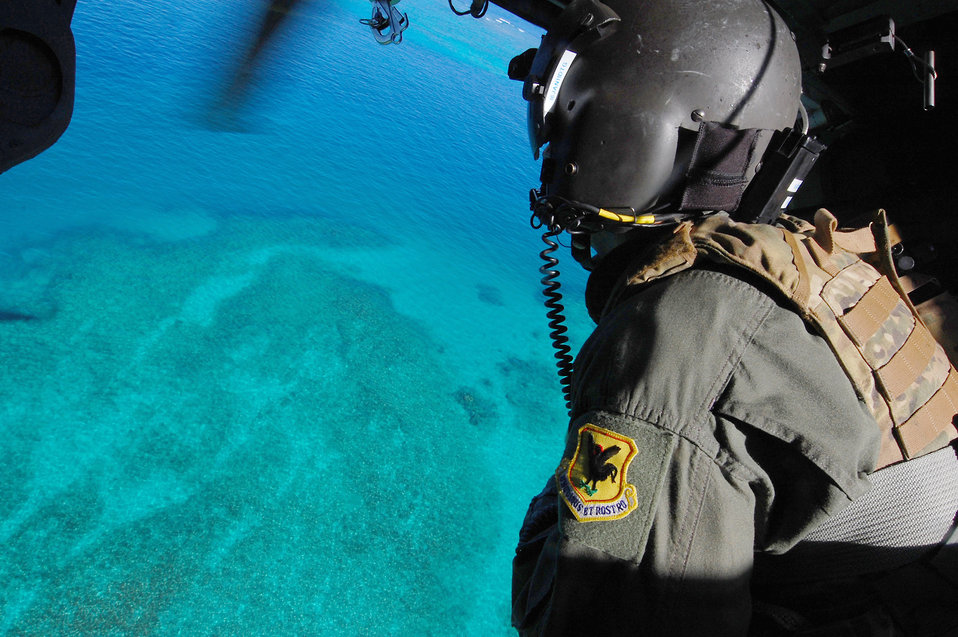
Keen Sword 2011

Senior Airman Jeremy observes the rescue area during the Keen Sword exercise Dec. 6, 2010, Kadena Air Base, Japan. Keen Sword 2011 involves joint U.S. forces and Japan forces from all components of both militaries training to conduct bilateral operations in support of the defense of Japan. Airman Garrett is a flight engineer with the 33rd Rescue Squadron.